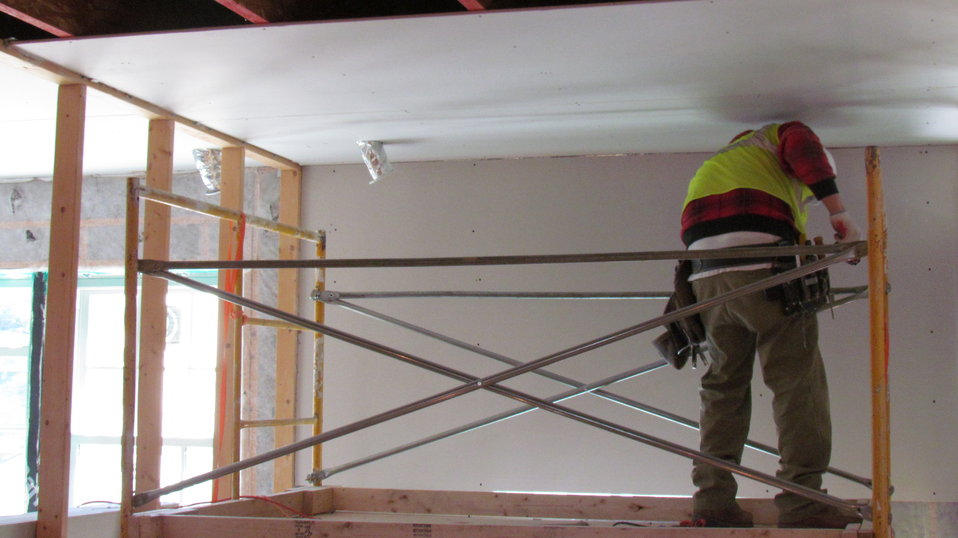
Drywall being installed in the interior of the facility.